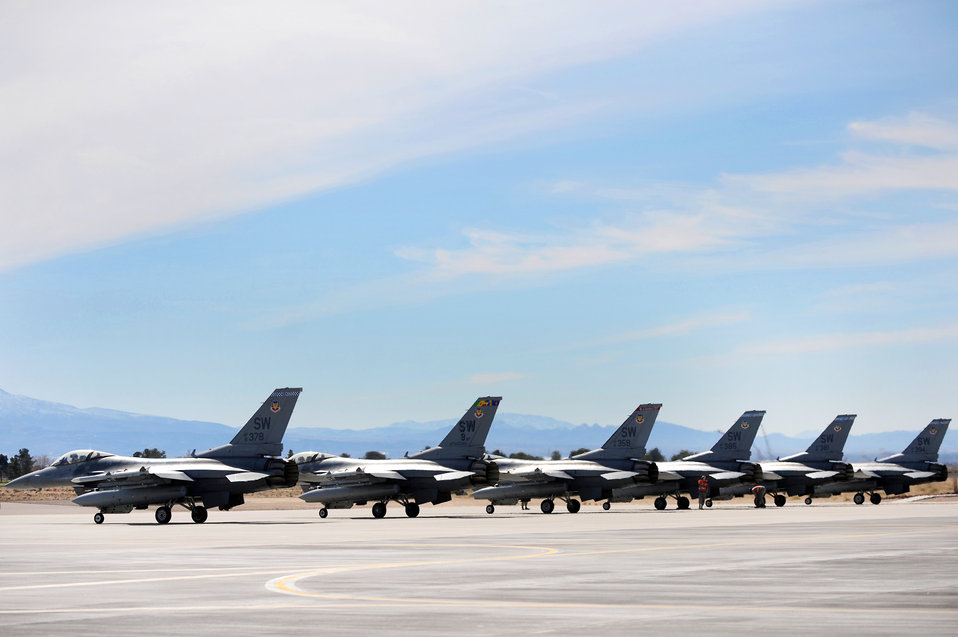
Shaw aircrews train at Red Flag

F-16 Fighting Falcons from Shaw AFB, S.C., sit at the end of the runway and await clearance for take off during Red Flag Feb. 23, 2010, at Nellis Air Force Base, Nev. Red Flag is a realistic combat training exercise involving the air forces of the United States and its allies. The exercise is conducted on the 15,000-square-mile Nevada Test and Training Range, north of Las Vegas.